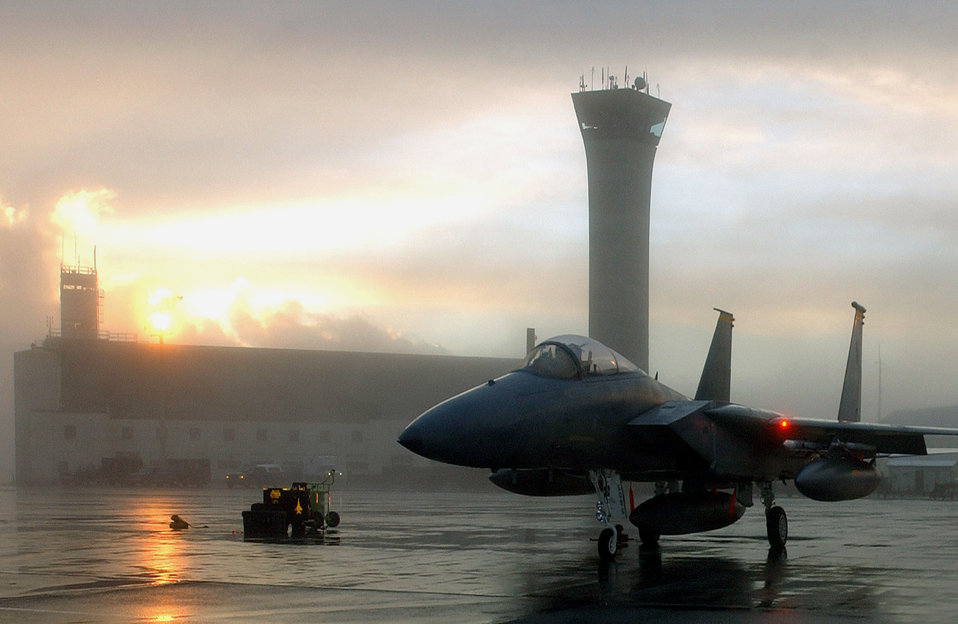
Ready to go

ELMENDORF AIR FORCE BASE, Alaska -- An F-15 Eagle from the 12th Fighter Squadron here prepares to taxi out for a real world deployment Oct. 26.